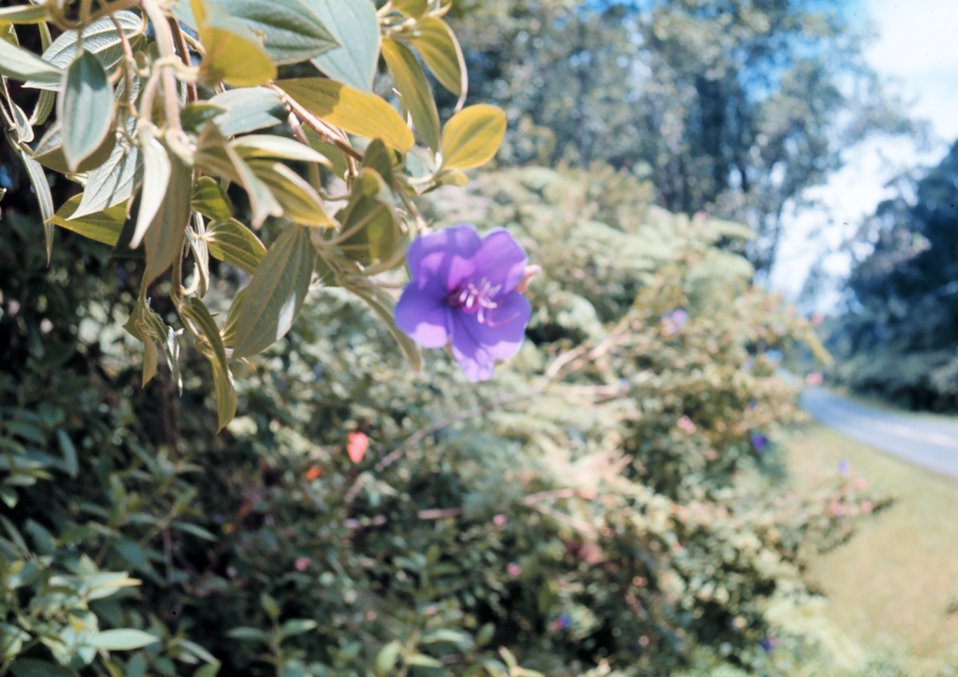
Hawaiian flowers